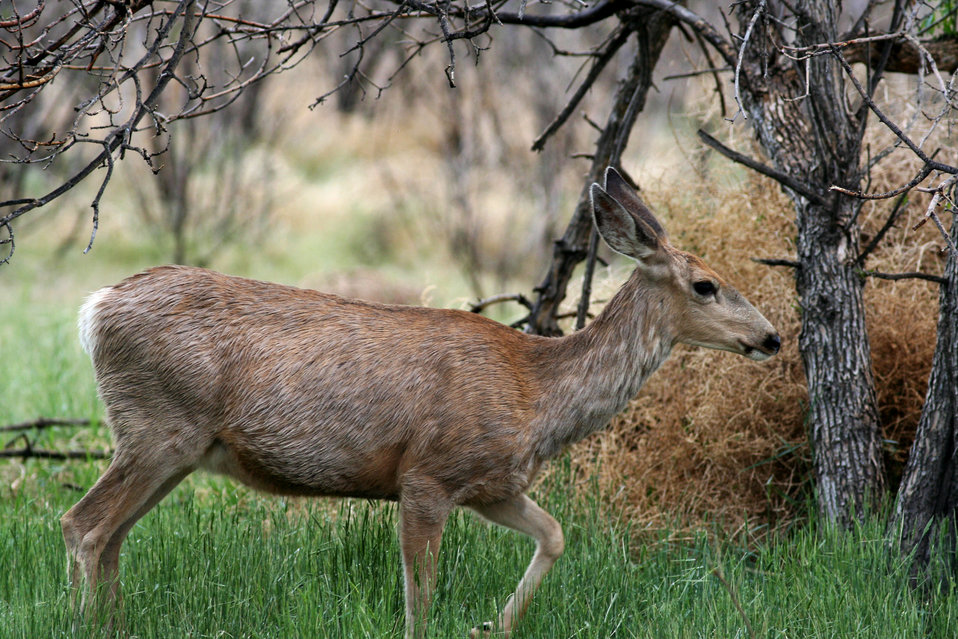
Doe at RMA

A doe mule deer dries out after a spring shower at Rocky Mountain Arsenal National Wildlife Refuge.